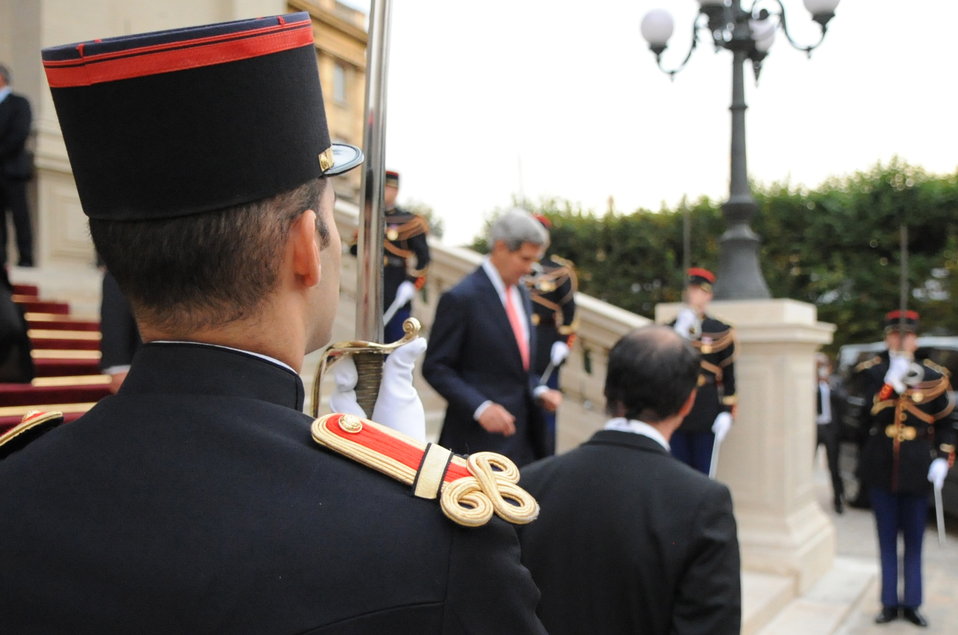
Secretary Kerry Departs French Ministry of Foreign Affairs

U.S. Secretary of State John Kerry walks through an honor guard as departs the French Ministry of Foreign Affairs in Paris, France on September 7, 2013.